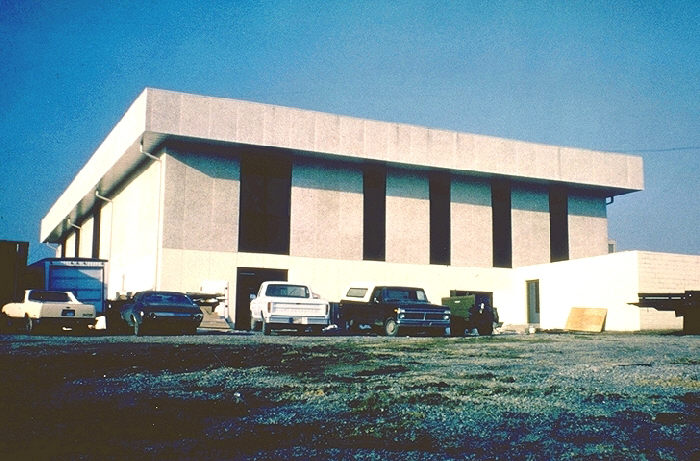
This is the National Institute for Occupational Safety and Health (NIOSH) Appalachian Laboratory.